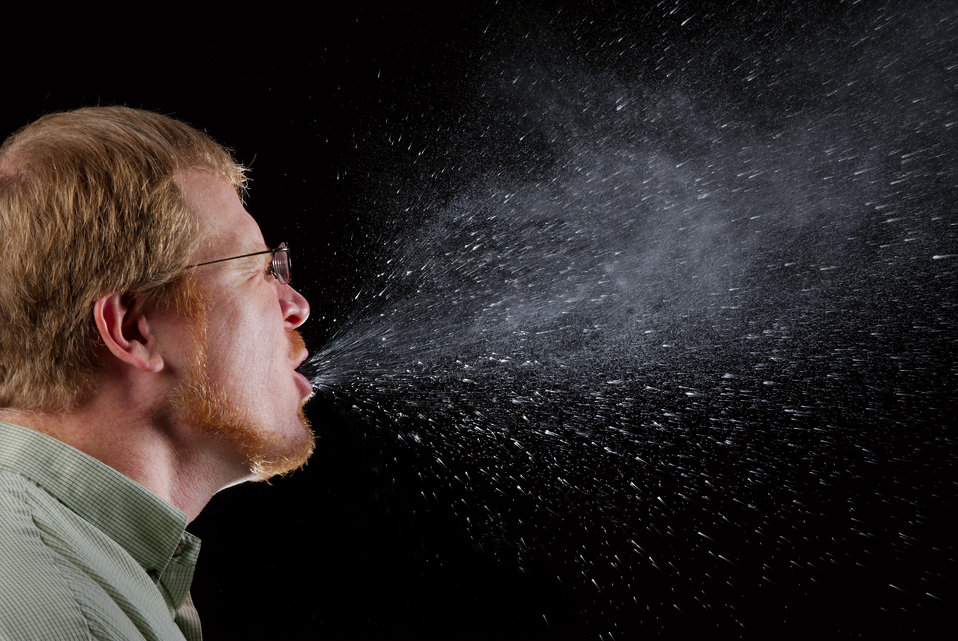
This 2009 photograph captured a sneeze in progress, revealing the plume of salivary droplets as they are expelled in a large cone-shaped array from this man's open mouth, thereby, dramatically illustrating the reason one needs to cover hios/her mouth when coughing, or sneezing, in order to protect others from germ exposure.